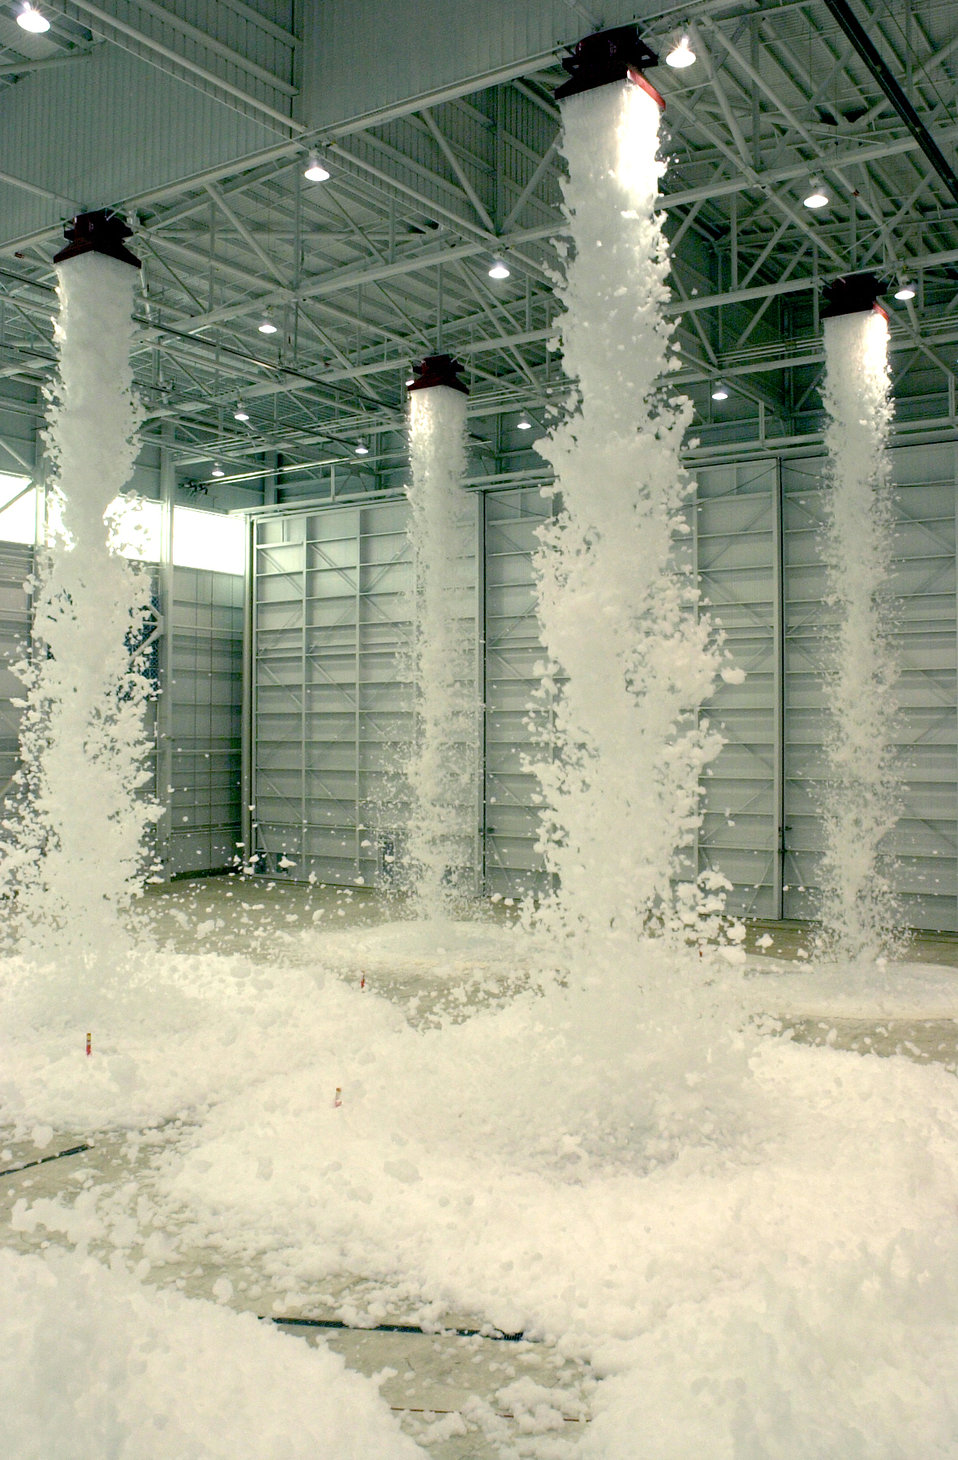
C-17s get state-of-the-art home

MARCH AIR RESERVE BASE, Calif. -- Generators pump foam from a 700-gallon tank onto the floor of a new hangar built for the 452nd Air Mobility Wing's C-17 Globemaster IIIs during the final fire sprinkler foam test April 20. The wing is scheduled to begin receiving C-17s on Aug. 9.